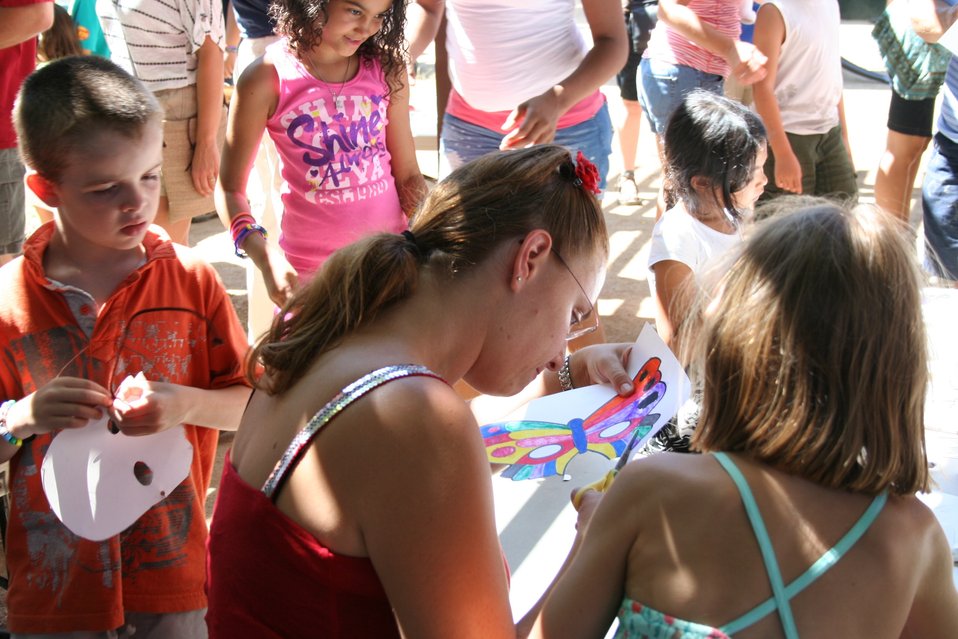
Kids activities brought in thousands of children and their parents

For the first time DOI agencies [US Fish & Wildlife Service, Bureau of Reclamation and Bureau of Land Management] joined together to host an America's Great Outdoors Booth at the California State Fair in Sacramento, Calif., July 14 - 31.

The booth included informational panels and displays as well as a children's activity area. Activities: wildlife masks, temporary tattoos, water-cycle bracelets, fish prints, touch boxes, scat bingo, a green-screen, coloring and bird bingo. Five days a week live raptors, snakes and bats were brought in.

About 50,000 children visitied the booth during the 18-day fair.